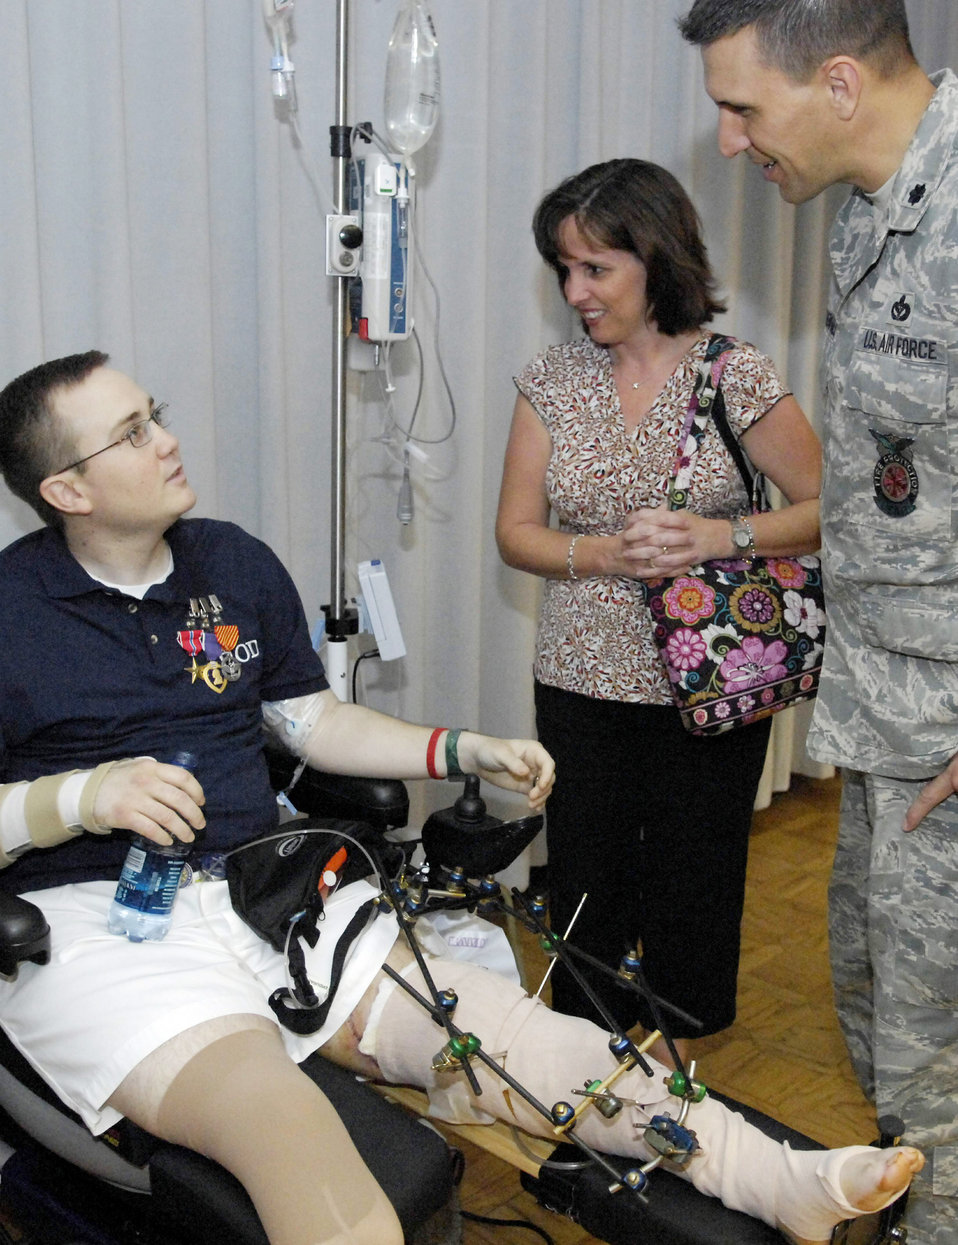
Wounded EOD technician has big plans

After his Purple Heart ceremony, Staff Sgt. David Flowers visits with Lt. Col. David Chisenhall and his wife,
Elaine, June 23 at Walter Reed Army Medical Center in Washington, D.C. Air Force Chief of Staff Gen. Norton Schwartz presented Sergeant Flowers with a Bronze Star, Purple Heart and a second Combat Action Medal. Colonel Chisenhall is the the 2nd Civil Engineer Squadron commander.